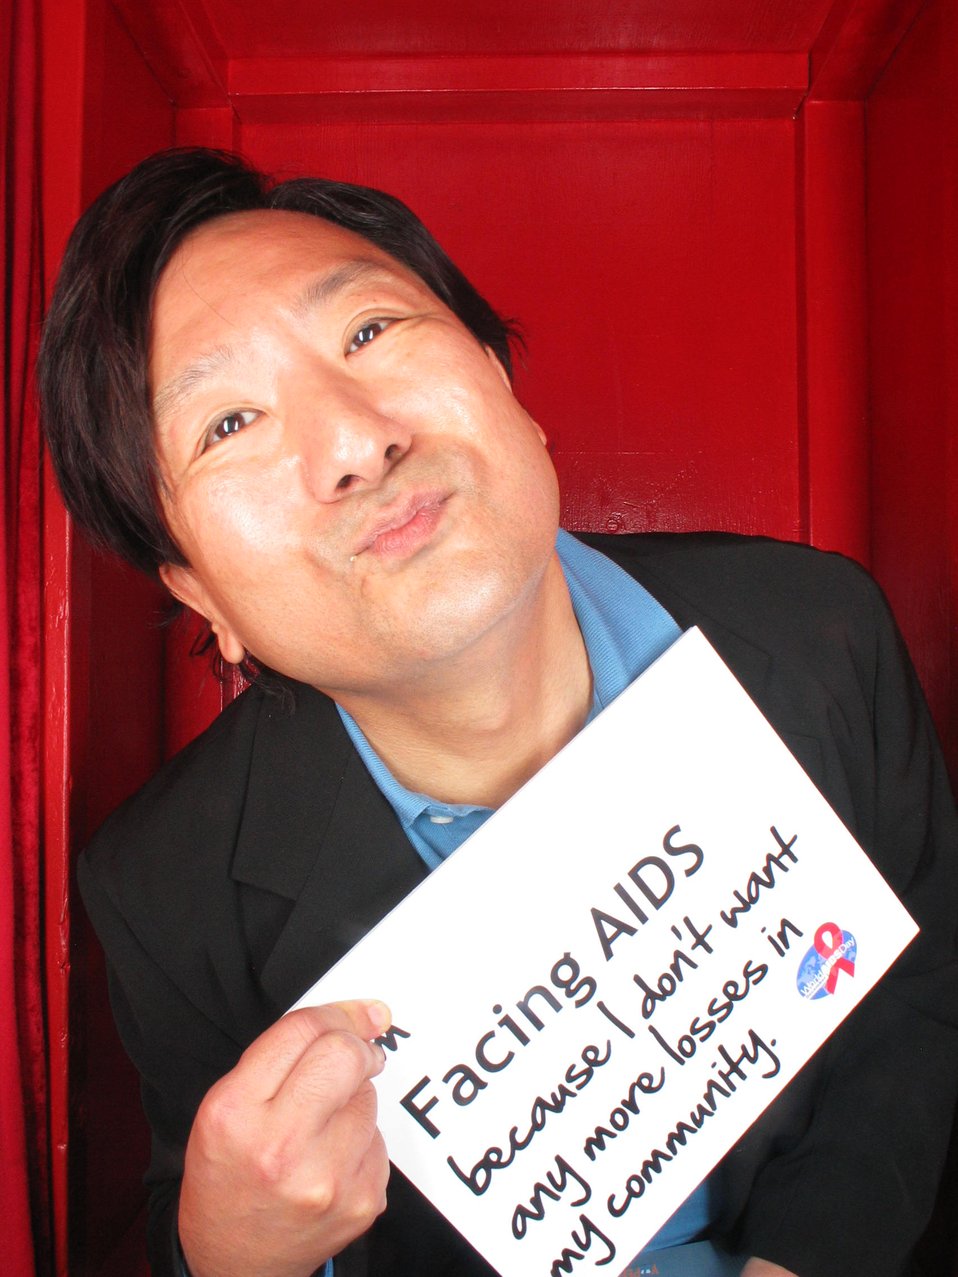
Facing AIDS because I don't want any more losses in my community.